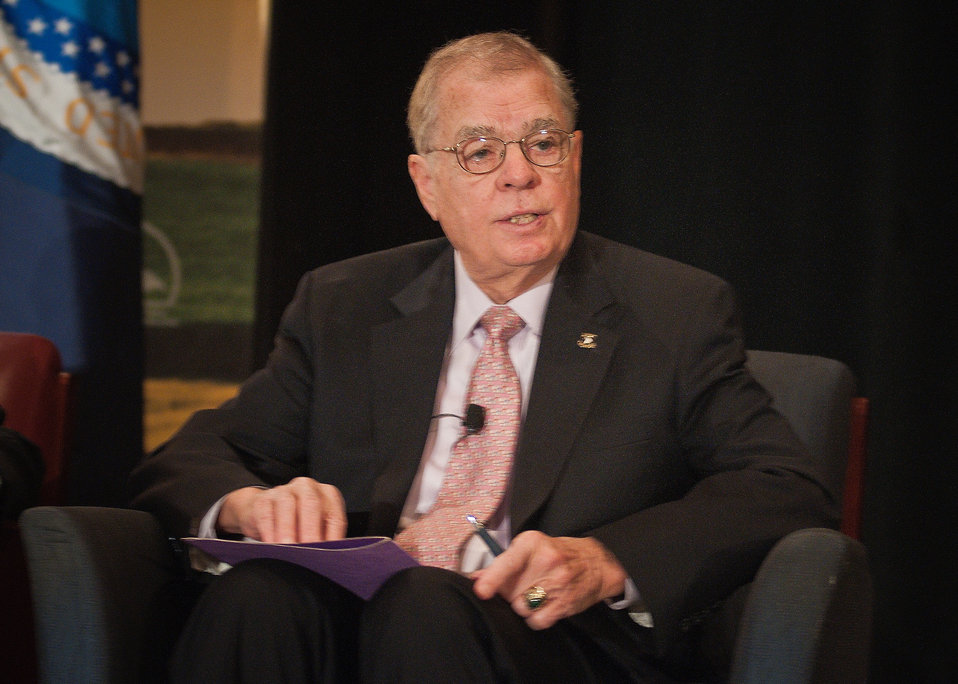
At the 2012 Agricultural Outlook Forum, “Moving Agriculture Forward” in Arlington, VA, held on Thursday, February 23, 2012, 7 former Secretaries of Agriculture sat on the plenary panel “Visions of the Future” hosted by current Agriculture Secretary Tom Vilsack. John Block speaks out during the panel discussions.